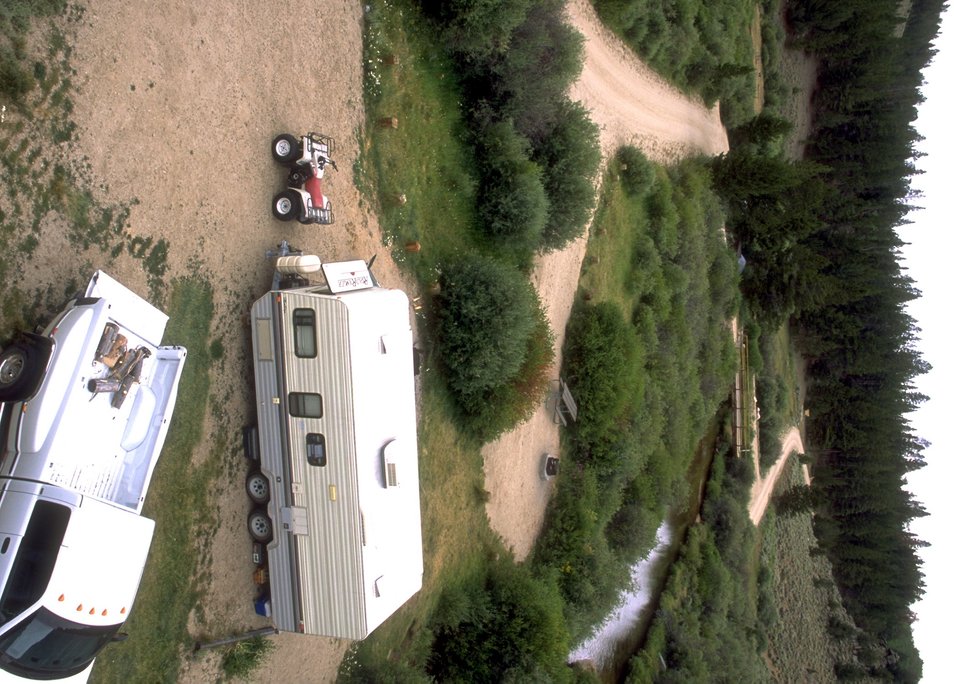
Sweetwater Bridge Campground, Rock Springs Field Office.